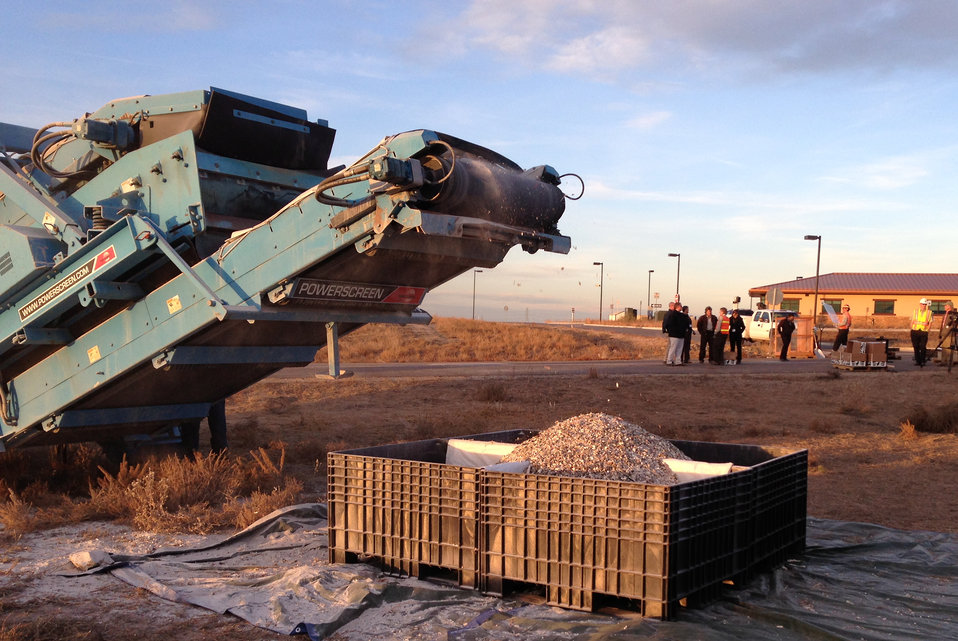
Crushing continues